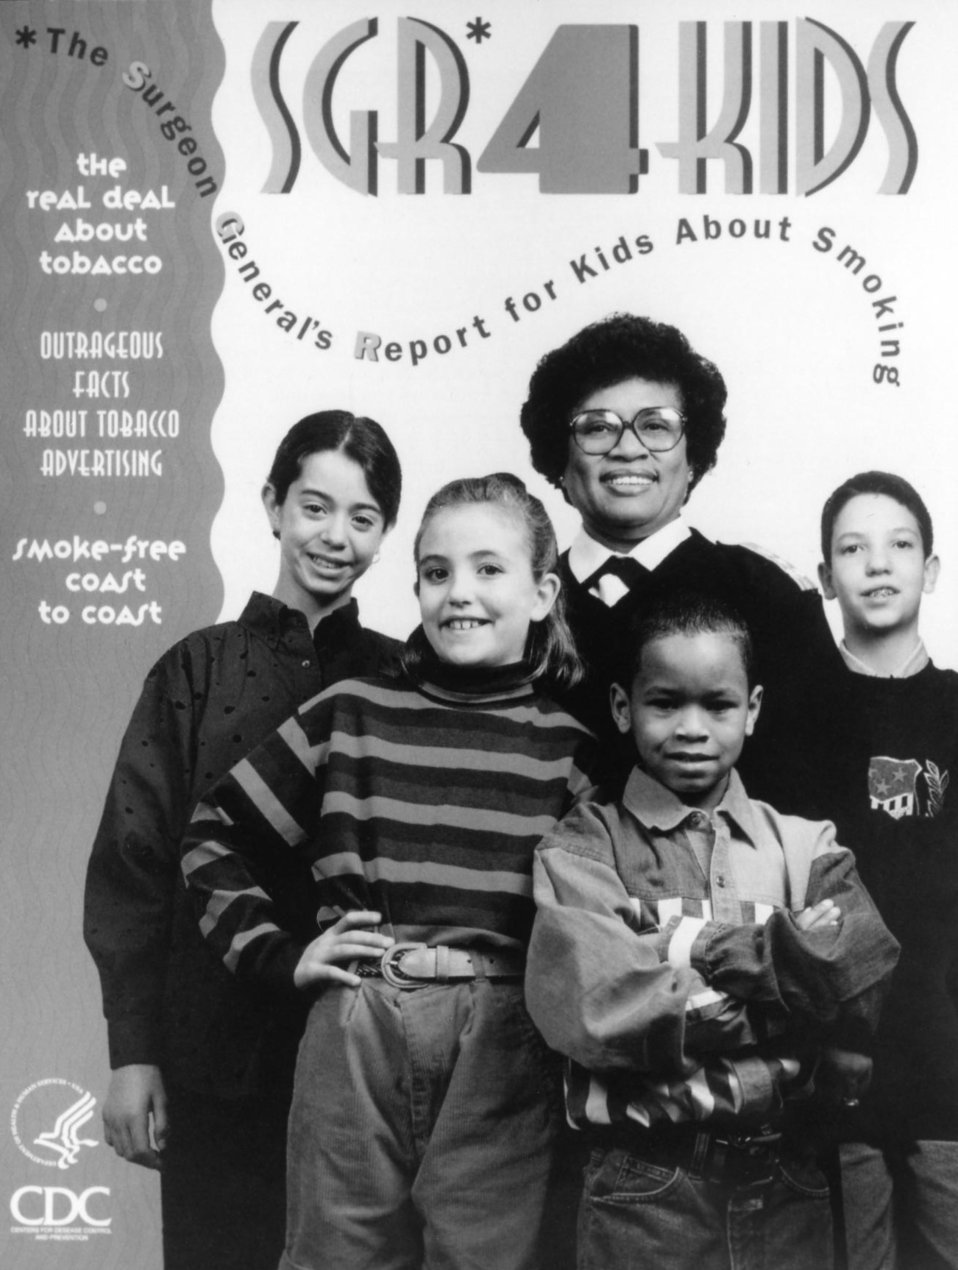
This was the 1993 cover design of that year's Surgeon General's Report, which focused on smoking and its affects on children. Shown posed with a group of children, the cover imagery featured Surgeon General, Dr. Joycelyn Elders, who served in that post from 1993 to 1994.